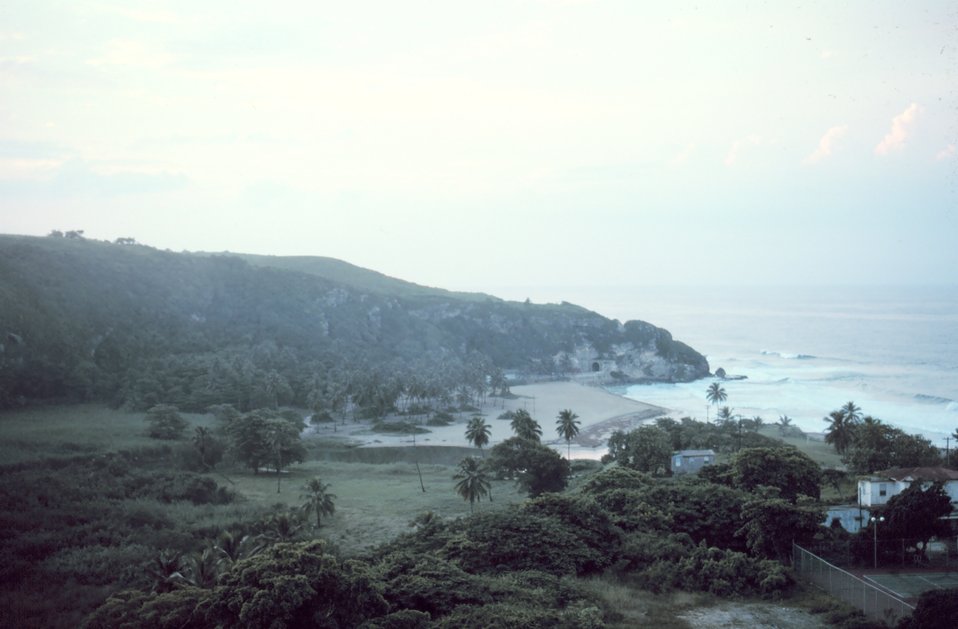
A beautiful beach on the NW coast of Puerto Rico.